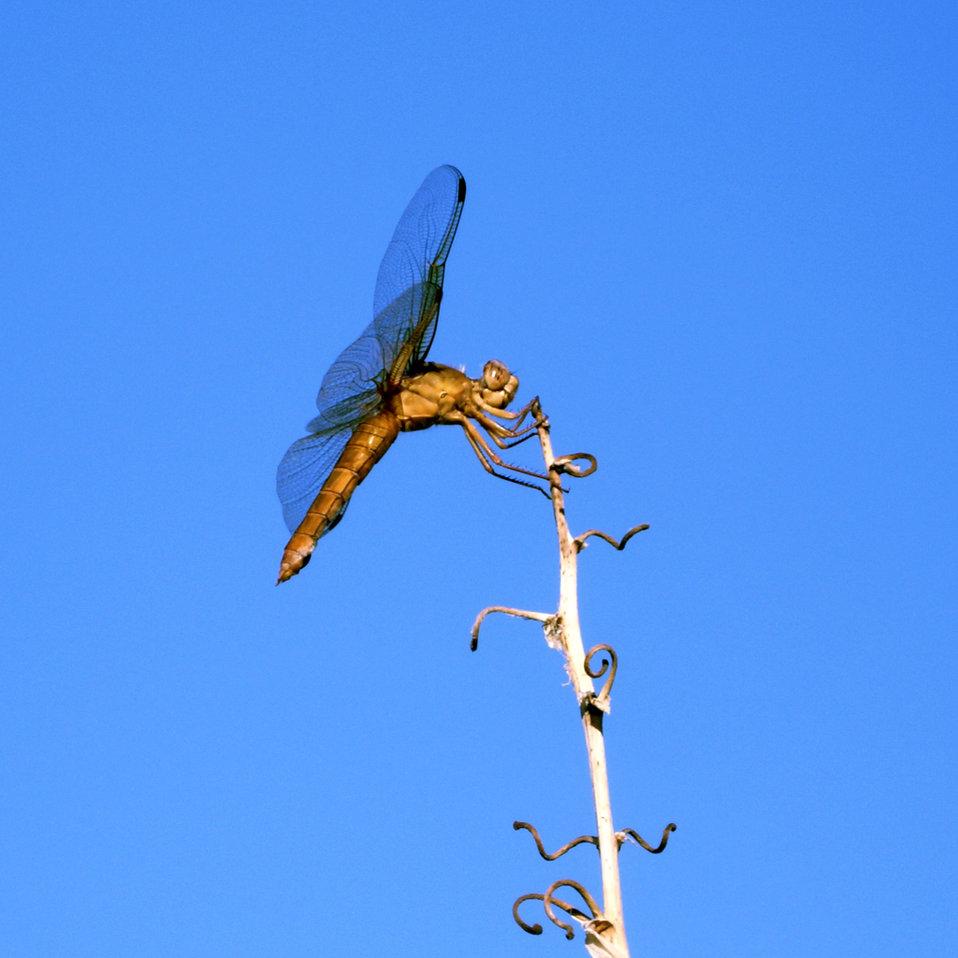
Uploaded by request of Maka Amaviska

Taken in an Arizona garden

Digital image, dragonfly holding on, appears to be wearing goggles and smiling, photoshop darkroon, title 'dragonfly smile'